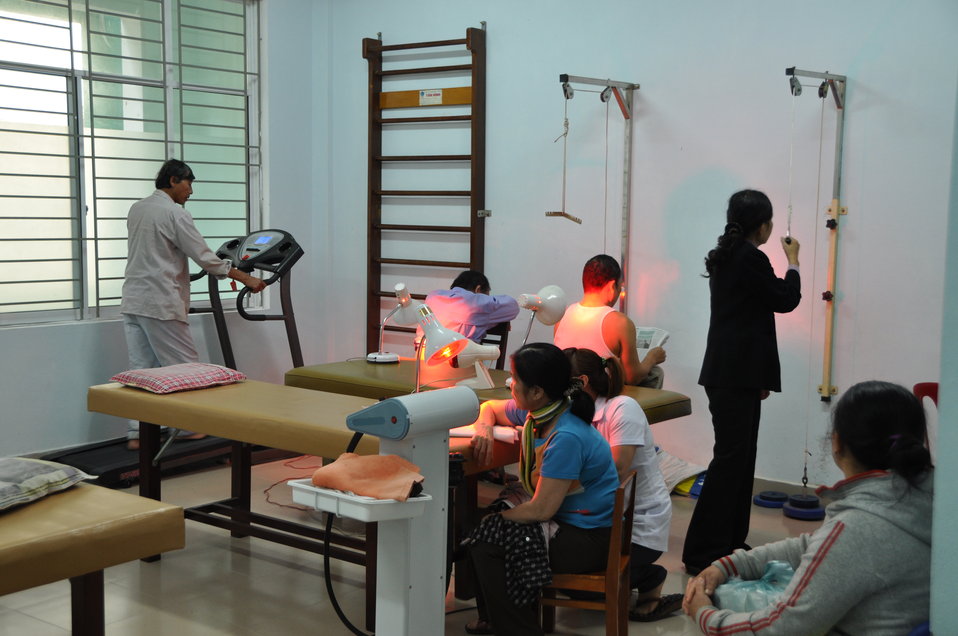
USAID support to Thanh Khe District Hospital

USAID-supported equipment and training help the staff at Thanh Khe District Hospital to meet the physical therapy needs of the disabled population of Danang.